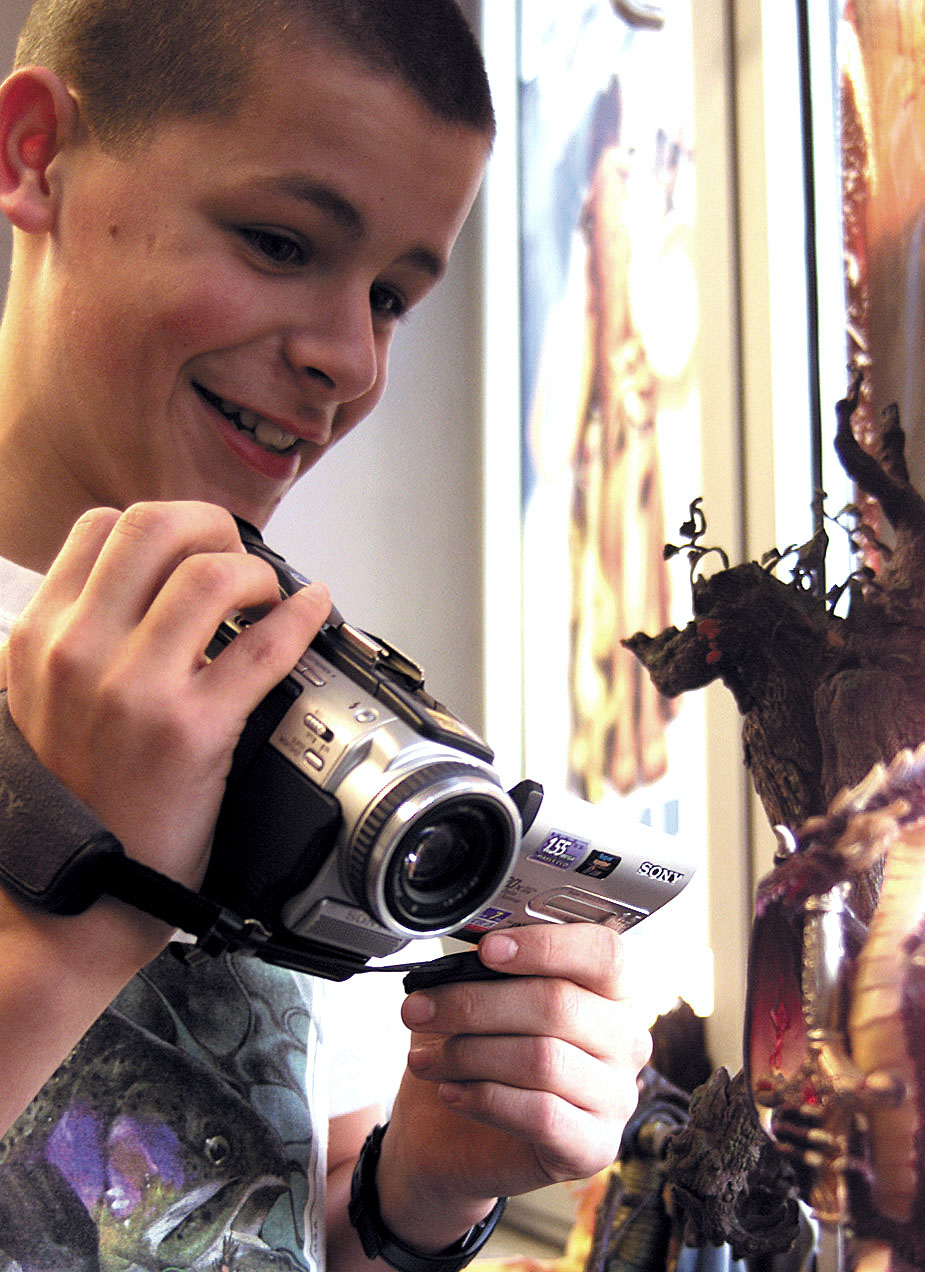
Making movies

SPANGDAHLEM AIR BASE, Germany -- Steven Watts, a 13-year-old Spangdahlem Middle School student here, gets a tight shot of Pete Goetz's dragon. Steven made a short film,